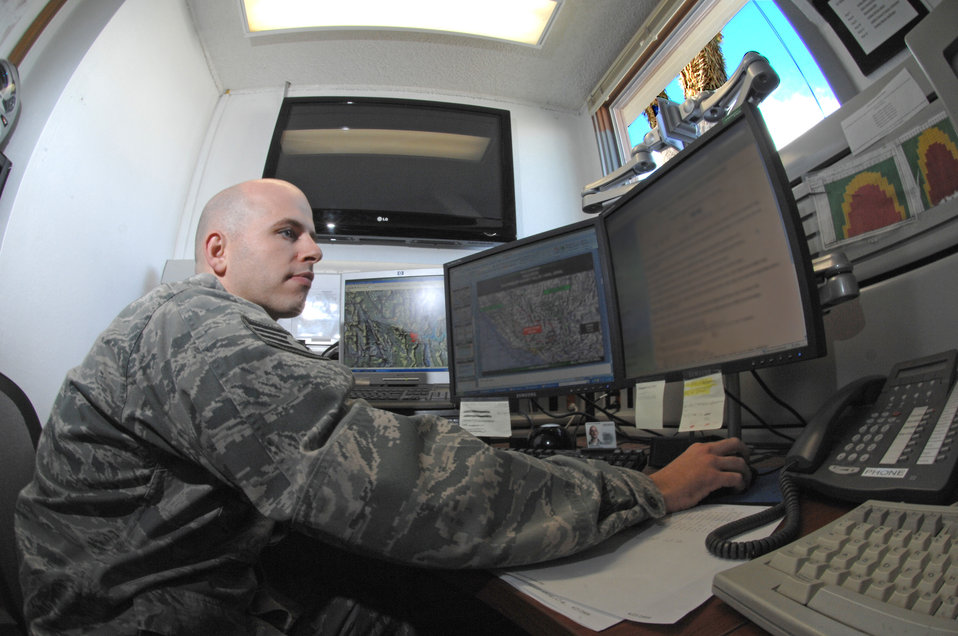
Training for unmanned aircraft systems

Staff Sgt. Cole Moreland produces mission execution forecasts and observing radars for flying missions April 22 at Creech Air Force Base, Nev. Sergeant Moreland is an unmanned aircraft systems weather forecaster assigned to the 432nd Operation Support Squadron Weather Flight.